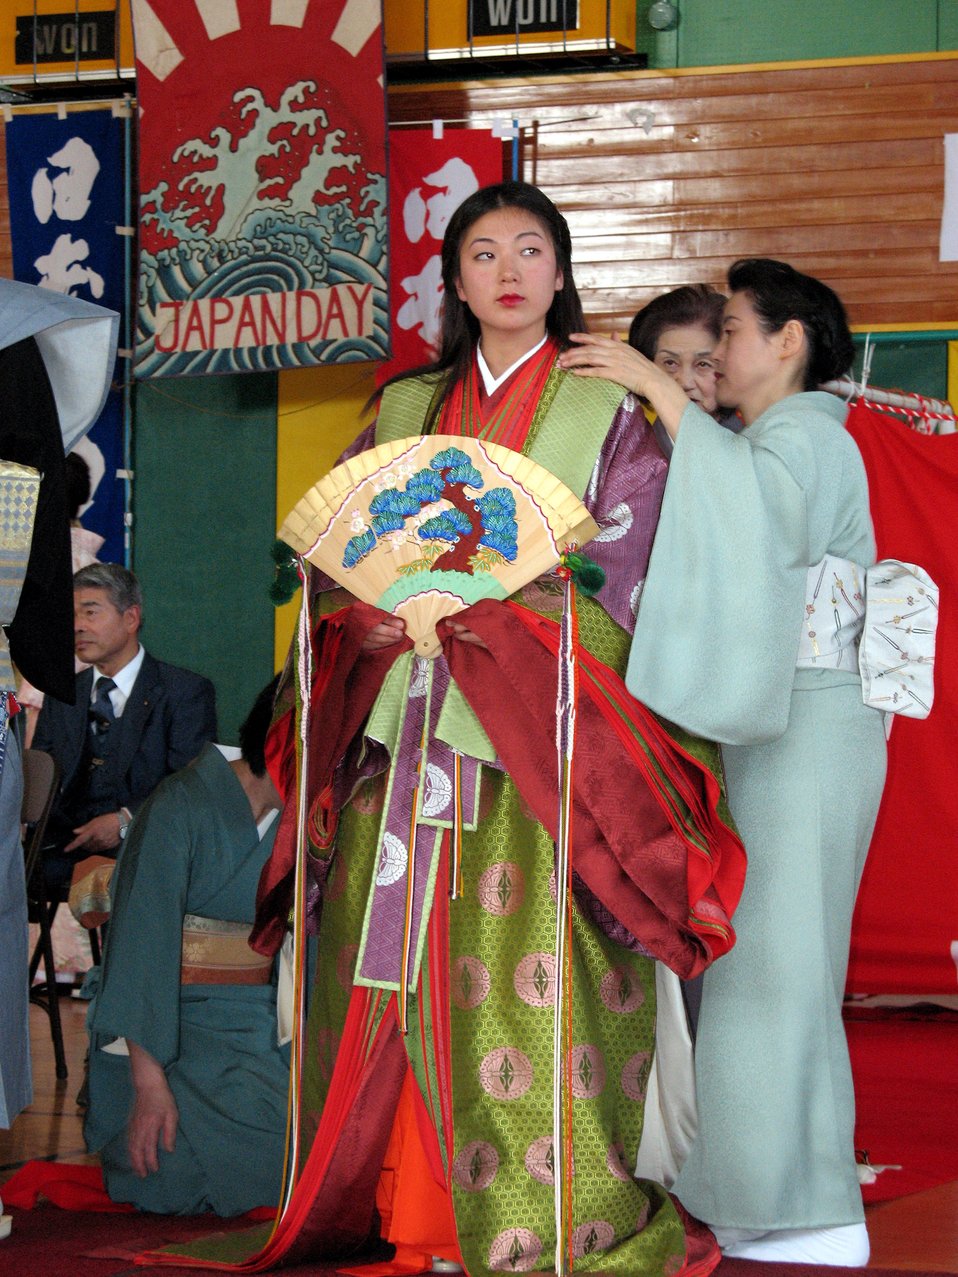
Airman exemplifies base's Japan Day

Airman 1st Class Song Lee takes center stage at Misawa Air Base's 20th Annual Japan Day wearing all 12 layers of an imperial kimono. Airman Lee is assigned to the 610th Air Control Flight at Misawa Air Base, Japan.